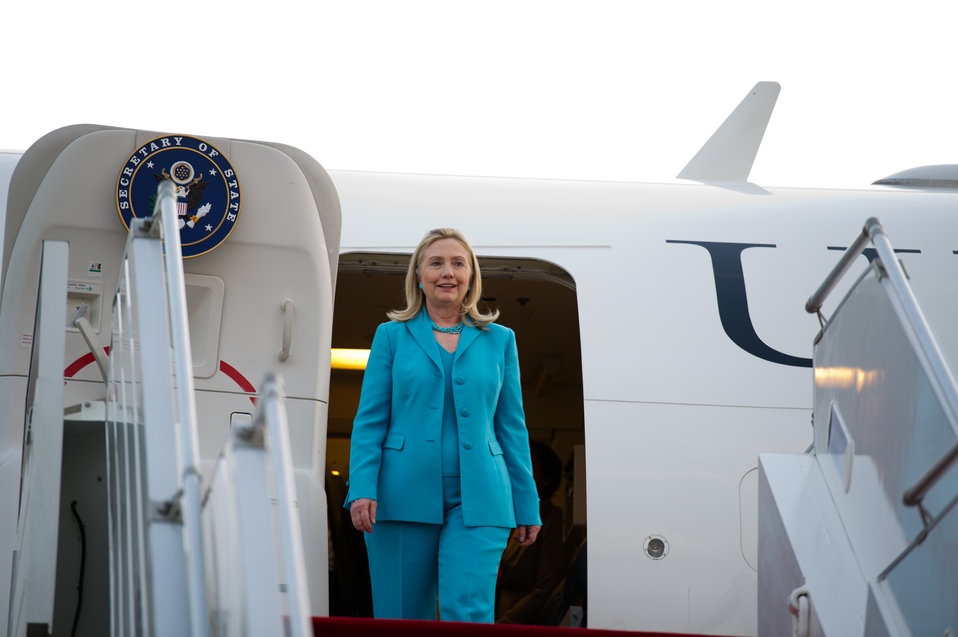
Secretary Clinton Arrives in Rangoon

U.S. Secretary of State Hillary Rodham Clinton arrives in Rangoon from Nay Pyi Taw to continue her historic visit to Burma on December 1, 2011.